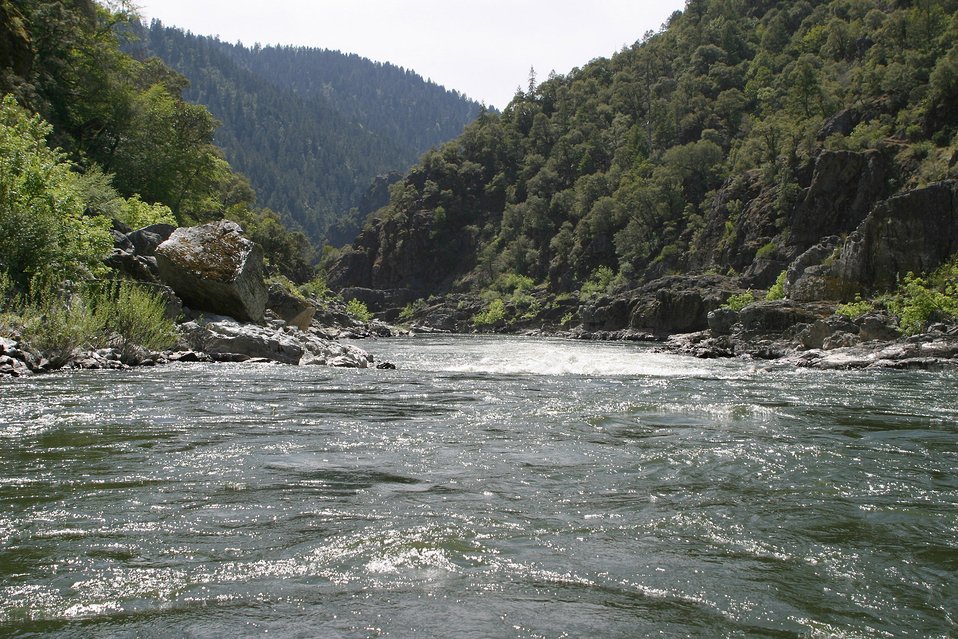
Wild section of the Rogue River from Grave Creek to Foster Bar. 3100 cfs at Grants Pass and 5300 at Agness.